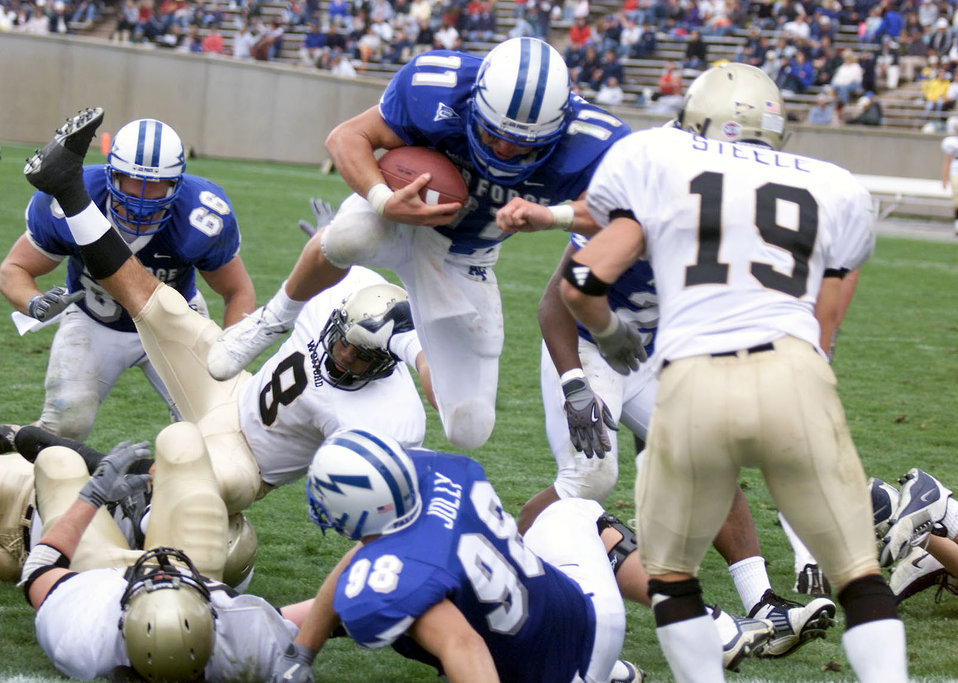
Dive in!

U.S. AIR FORCE ACADEMY, Colo. -- Air Force Academy Falcons quarterback Chance Harridge dives for the end zone over Wofford College defenders for a 3-yard score. Harridge led the Falcons to a 469-yard performance on offense to start the season with a 49-0 shutout of Wofford College on Aug. 30.